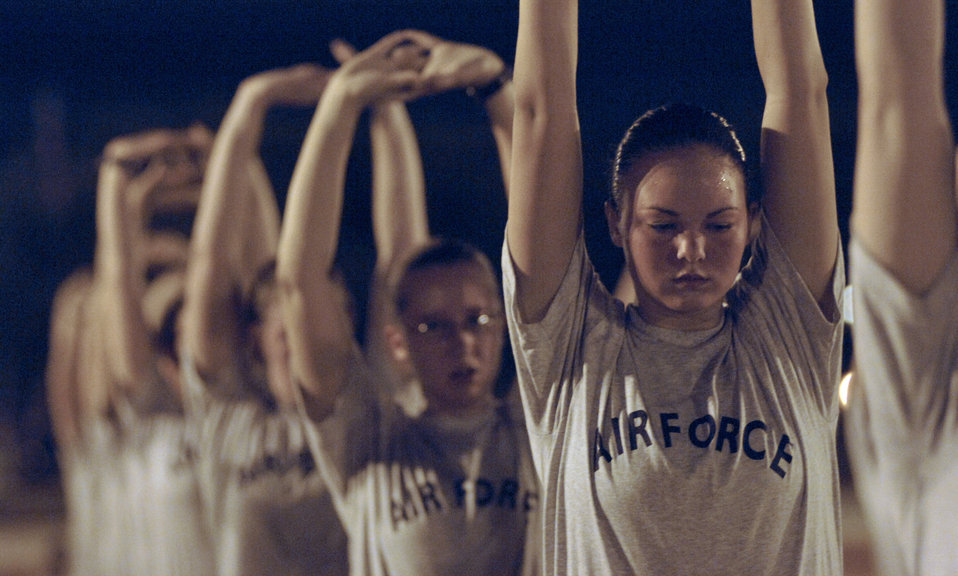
Readiness training

Airman Basic Rozlyn Petersen and fellow basic military trainees conduct physical readiness training at Lackland Air Force Base, Texas. The trainees are members of the 322nd Training Squadron, Flight 572. They began their training June 27.